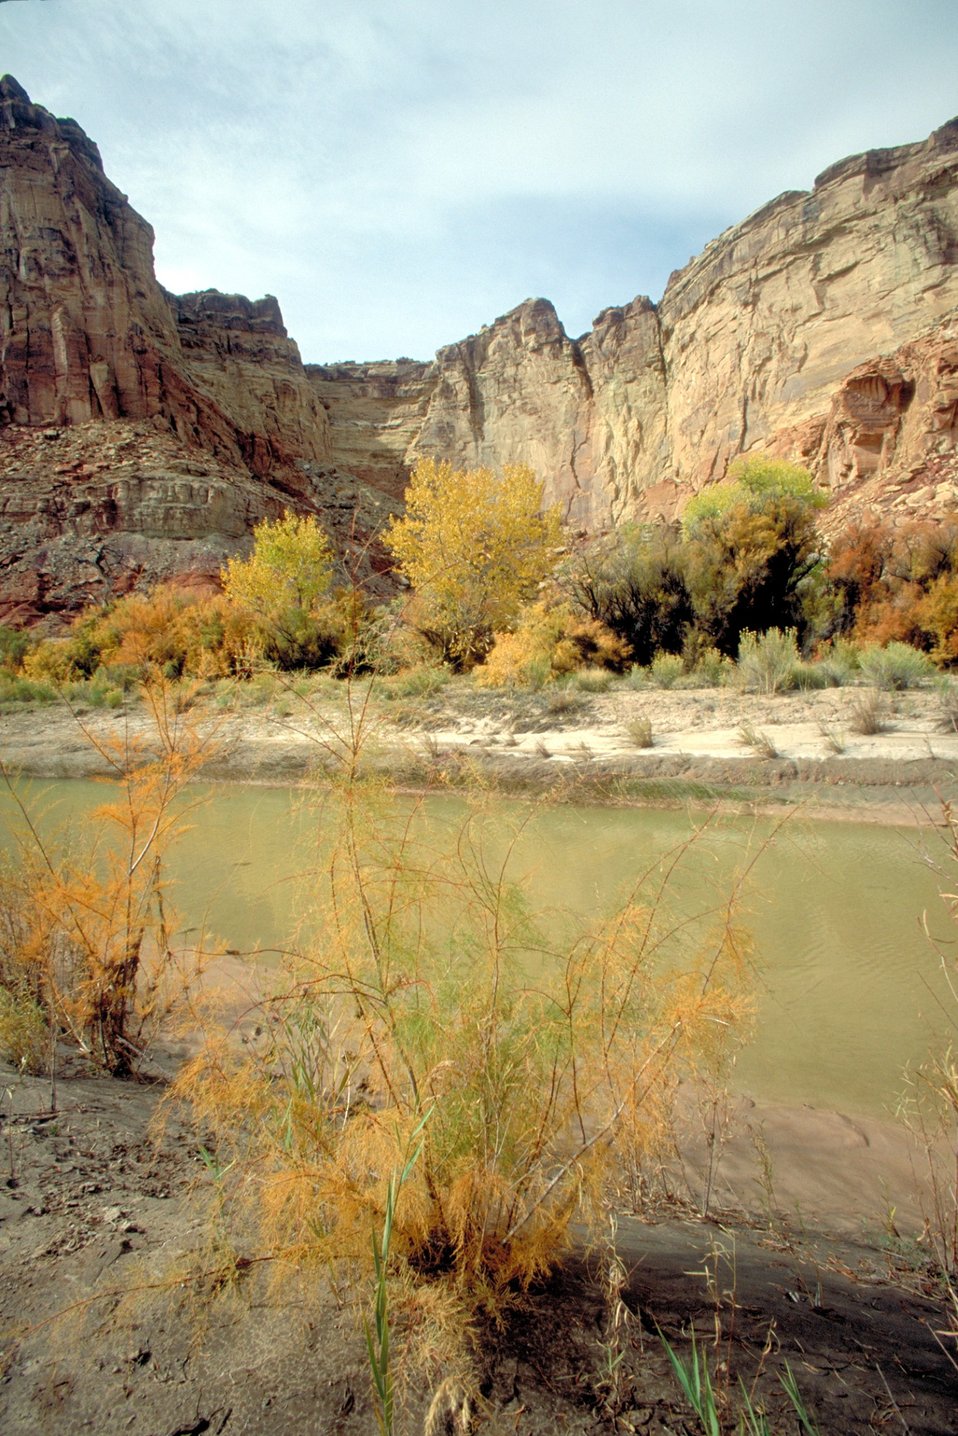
Upper Muddy Creek along the Red Canyon Loop, San Rafael Swell.